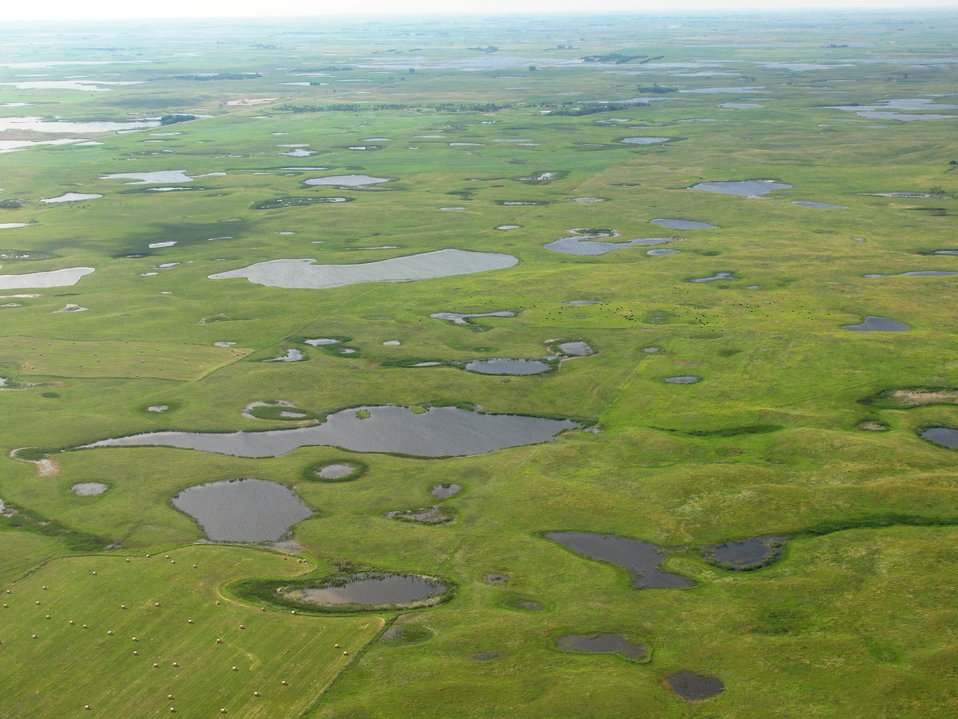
Prairie Potholes

One can see that wetlands of all sizes and shapes are found in this area. The smallest wetlands warm up early in the spring and raise large numbers of insect larvae that ducks and other birds feed on. The middle-sized wetlands hold water for a longer portion of the year and provide both safety and food for hens and ducklings. The large wetlands are big, safer areas for waterfowl and other water birds to stage (gather) before migration. However, they usually don't hold as much insect food (especially if fish or minnows are present).